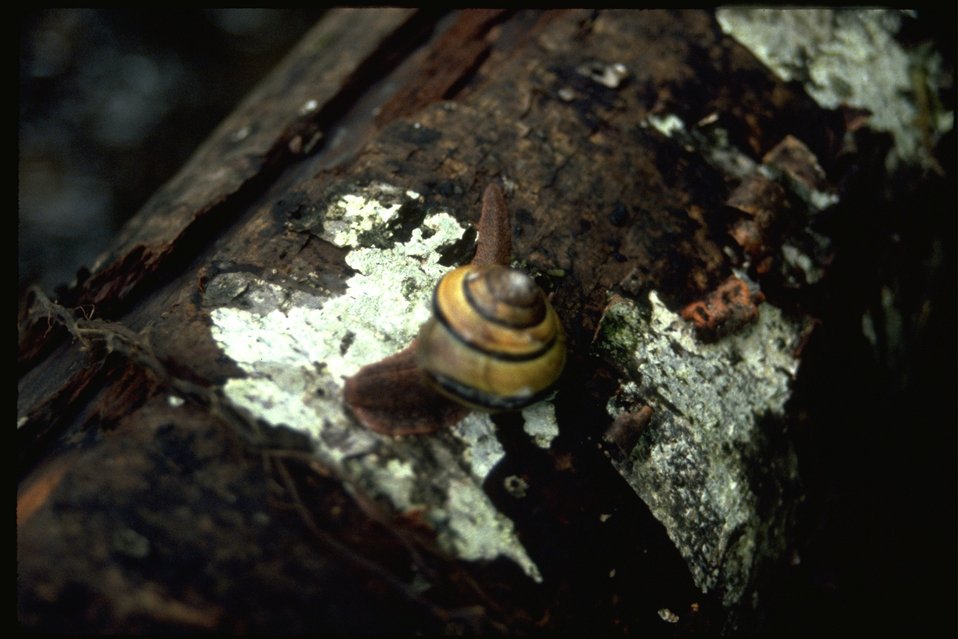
Macro shot of a snail.